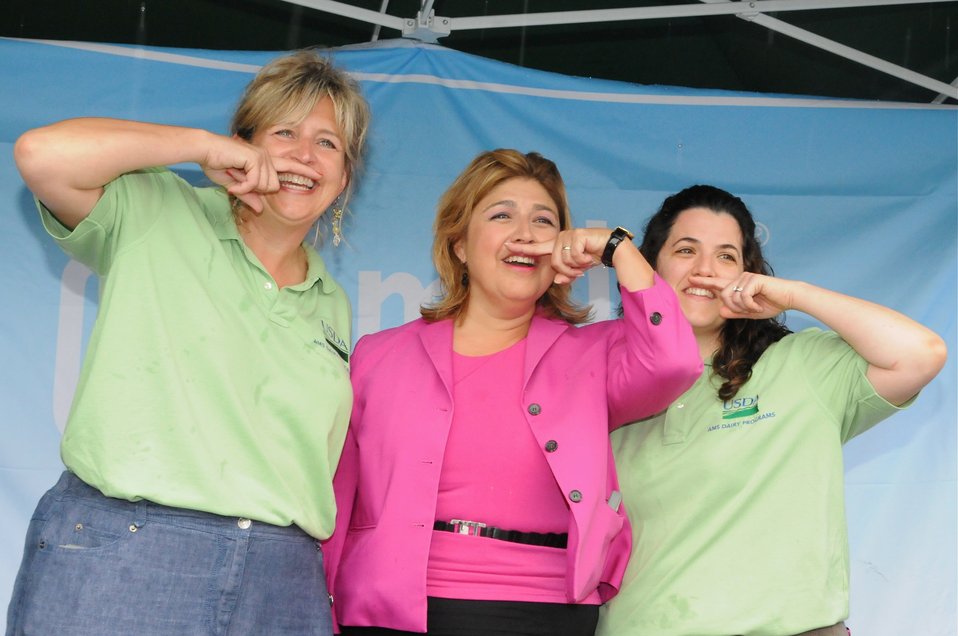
Got Milk? Improvises

U.S. Department of Agriculture (USDA) Agricultural Marketing Service (AMS) Administrator Anne Alonzo improvises a milk mustache before the opening of the USDA Farmers Market on Friday, Jun. 7, 2013.